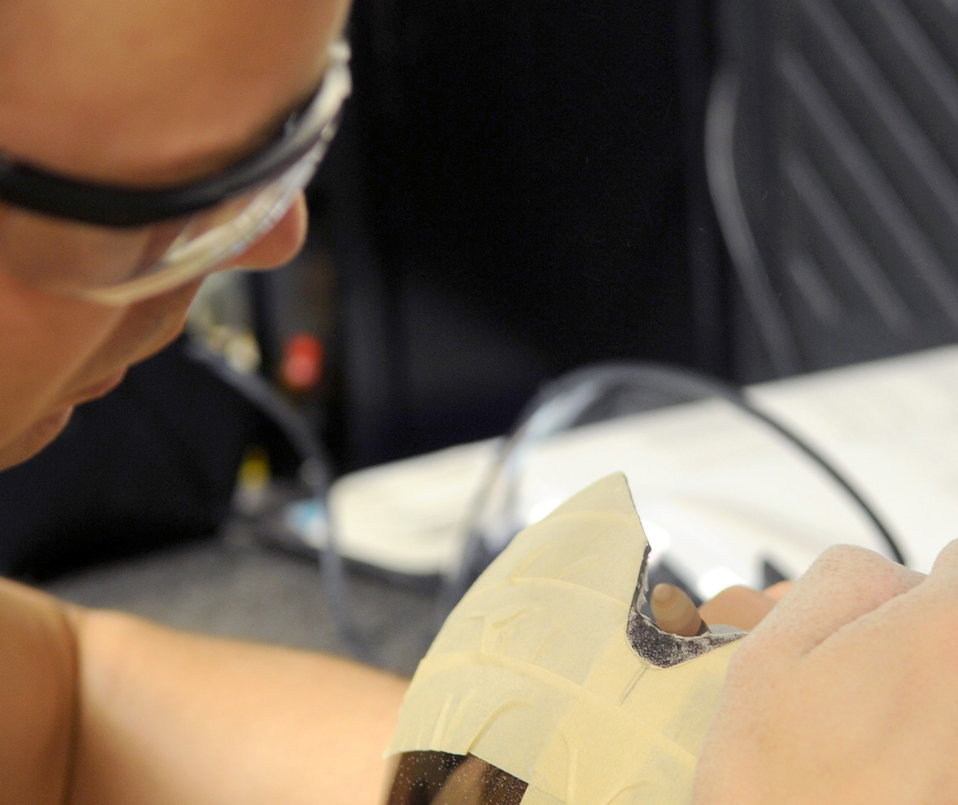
Airmen enhance F-15E capabilities with helmet-mounted cueing system

Senior Airman Kevin Boyne uses an electric sander to grind down the visor of a Joint Helmet-Mounted Cueing System Aug. 9, 2010, at Seymour Johnson Air Force Base, N.C. Each visor is custom-fitted to a pilot's facial features to ensure a comfortable fit, also protecting their face against sun and wind. Once fitted correctly, the helmet display unit allows images to be projected on the pilot's visor and includes the ability to be reconfigured in-flight to meet night vision requirements. Airman Boyne is a 4th Operations Support Squadron aircrew flight equipment craftsman.